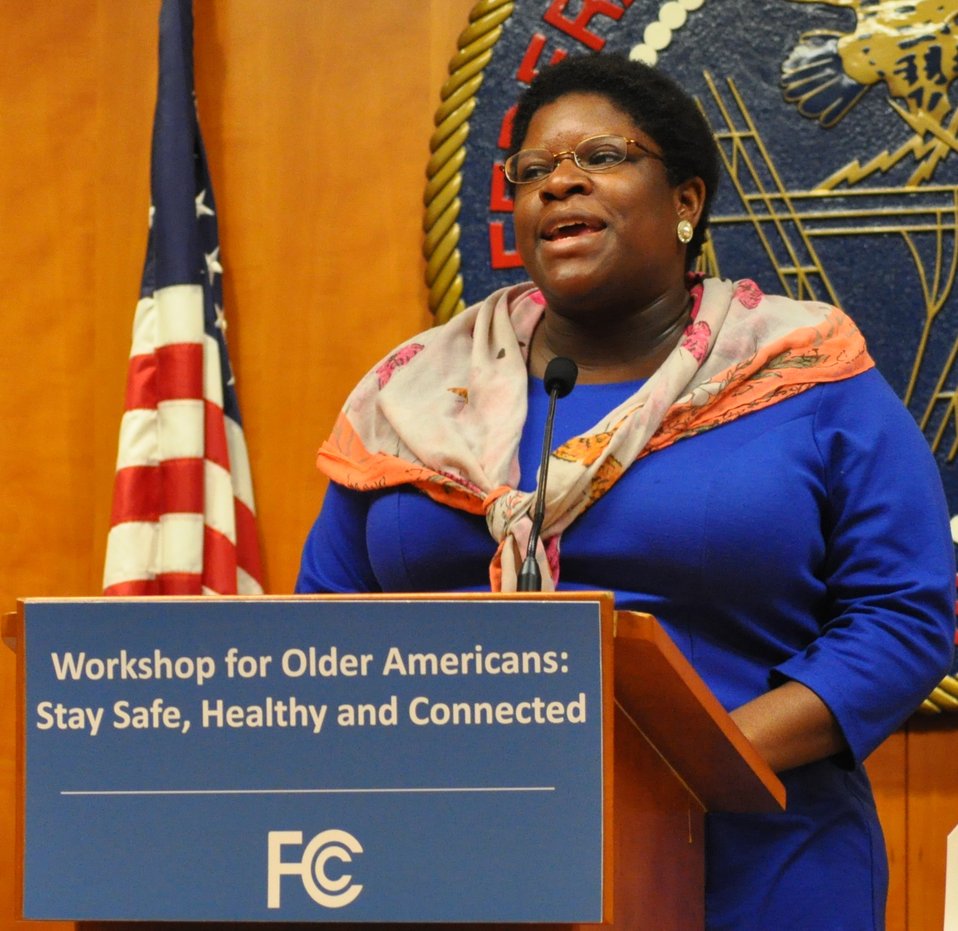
5.22.2014 Workshop for Older Americans: Stay Safe, Healthy and Connected

Sheila Dugan, Marketing and Communications Manager, EveryoneOn